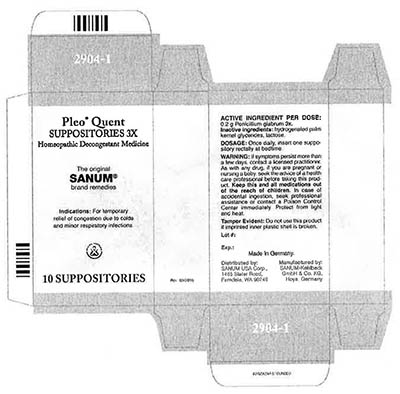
RECALLED – Homeopathic Drug Products

March 18, 2014 – Product Recall – Terra-Medica Issues Voluntary Nationwide Recall of Specified Lots of Pleo Homeopathic Drug Products Due to the Potential for Undeclared Penicillin.